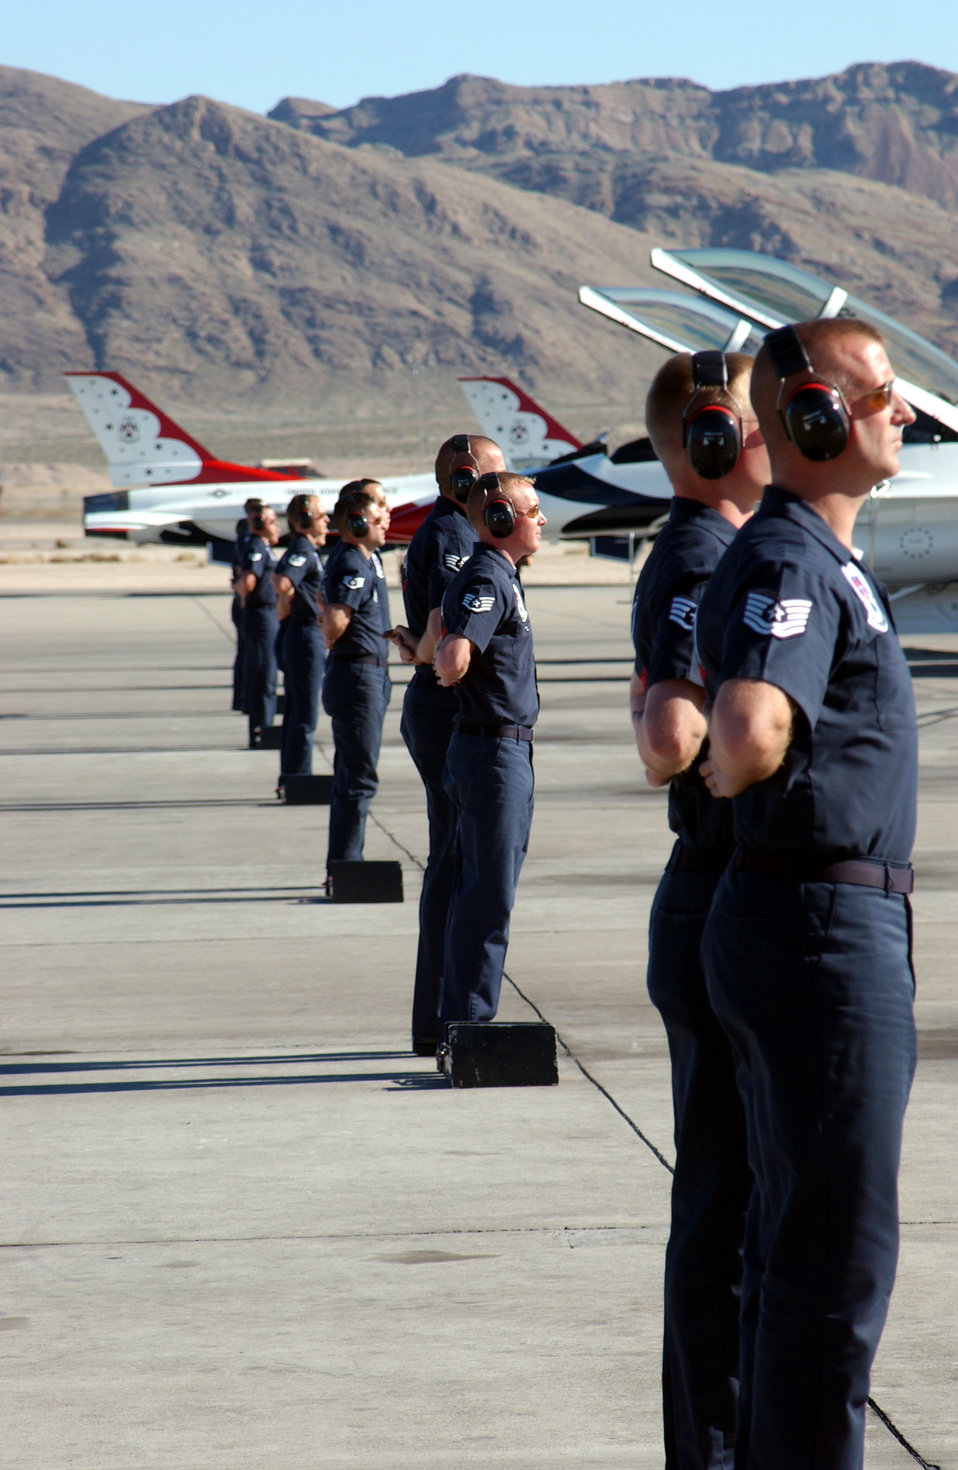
Thunderbirds in training

NELLIS AIR FORCE BASE, Nev. -- The 2005 Thunderbird Show Line stands ready to meet six jets moments after a practice flight by the 2005 demonstration team here. The U.S. Air Force Aerial Demonstration Squadron "Thunderbirds," who start their show season in March, are scheduled to perform at 45 different show sites in the United States, Canada and Central America.